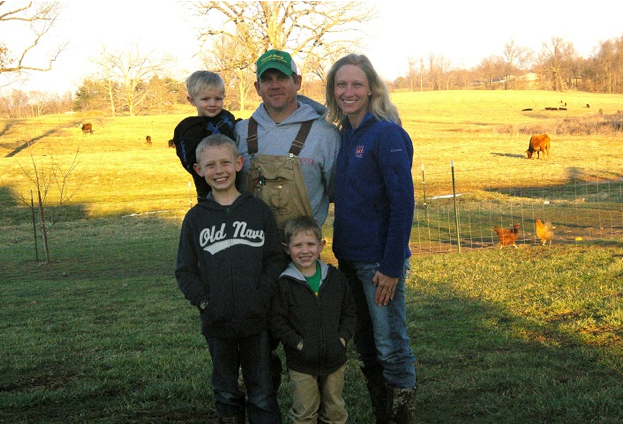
Rotational Grazing

Jake and Jondra Shadowen and family use conservation programs to improve their Benton, KY ranch.